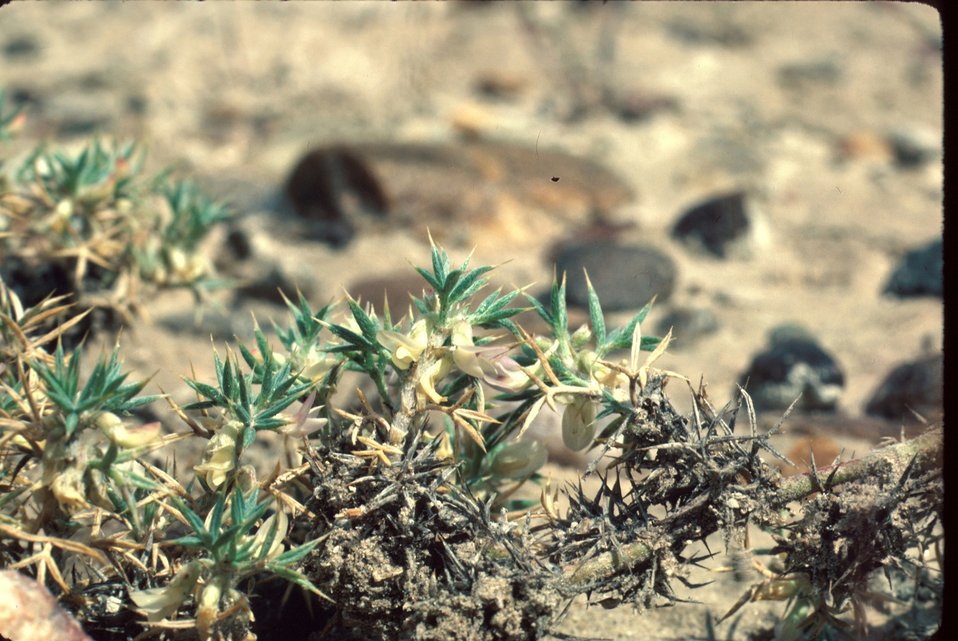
Astragalus Kentophyta Milkvetch Wildflower